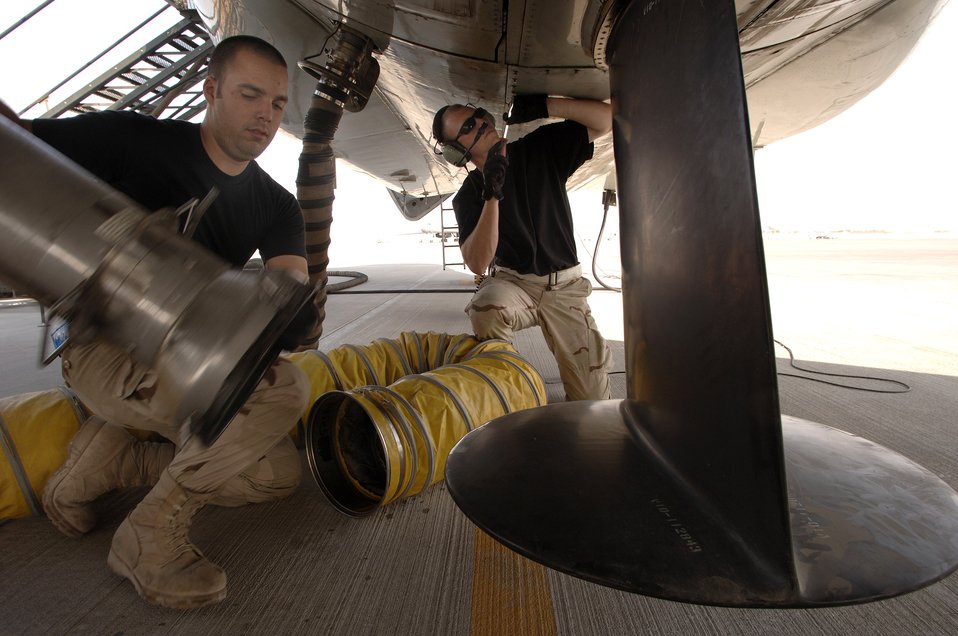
Air conditioning hoses

Senior Airman Matthew Campbell and Airman 1st Class Jonathan Campana disconnect one of many air conditioning hoses on an RC-135 Rivet Joint reconnaissance aircraft prior to its departure for a mission over Southwest Asia. Both crew chiefs are deployed from Offutt Air Force Base, Neb.